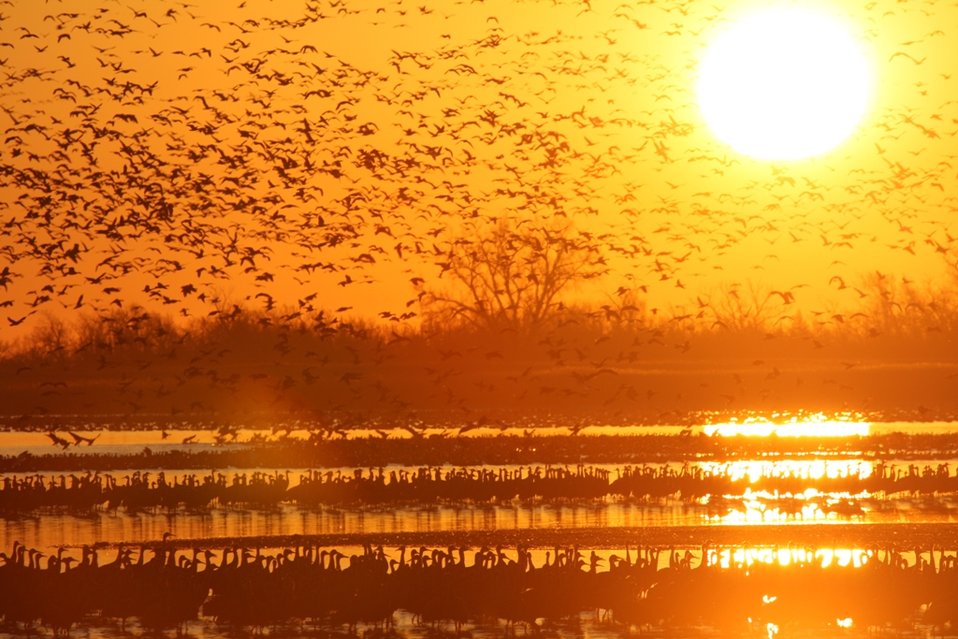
Waterfowl at Quivira National Wildlife Refuge